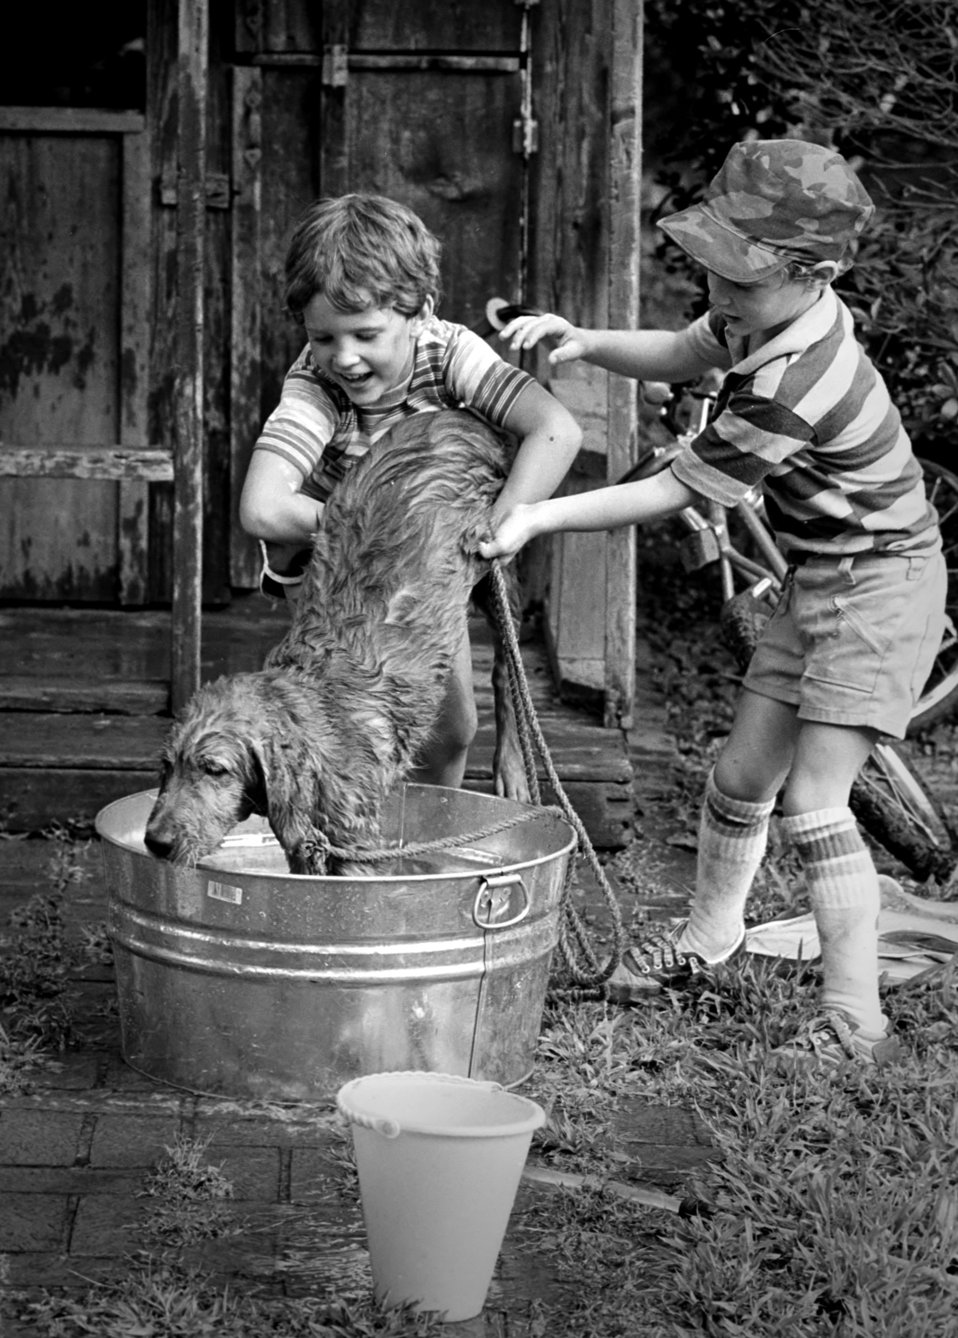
This photograph depicts unknown mixed breed of dog who was in the process of receiving a bath from two small children. Note the docile, relaxed disposition of this pet, which is ideal when thinking about adding a canine family member, especially when small children are involved.The CDC advises that you consider the following before you decide to own a dog: